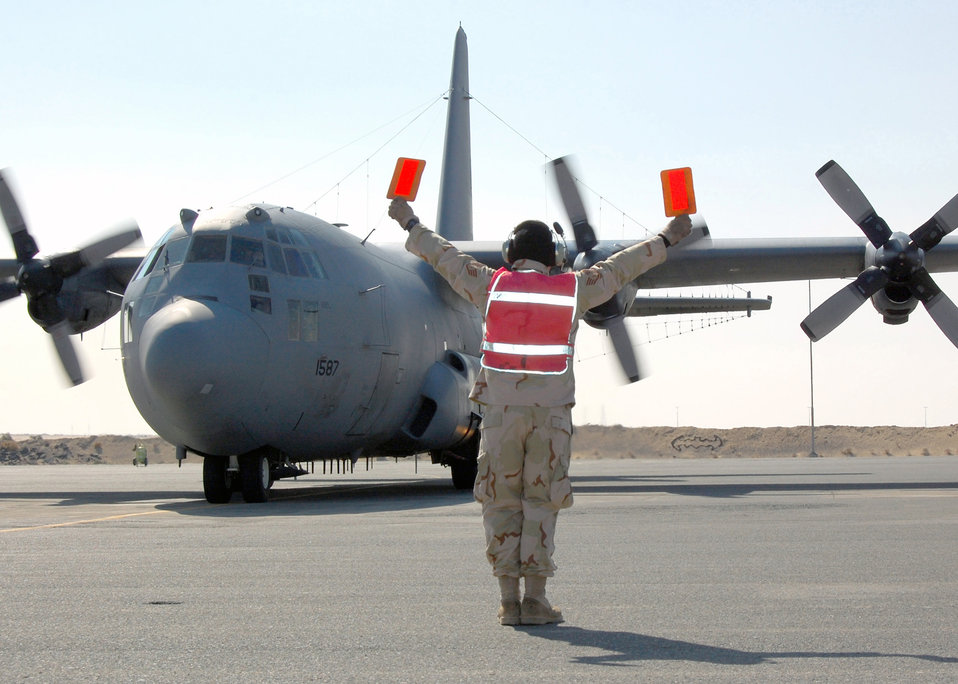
Jan. 24 airpower summary: Recon aircraft keep eye on enemy

Staff Sgt. Jeffrey Weeks, 386th Expeditionary Aircraft Maintenance Squadron, marshals an E-C130H Compass Call on the flightline. The E-C130H Compass Call system employs offensive counter-information and electronic attack capabilities which integrate and synchronize U.S. and coalition tactical air, surface, and special operations forces.